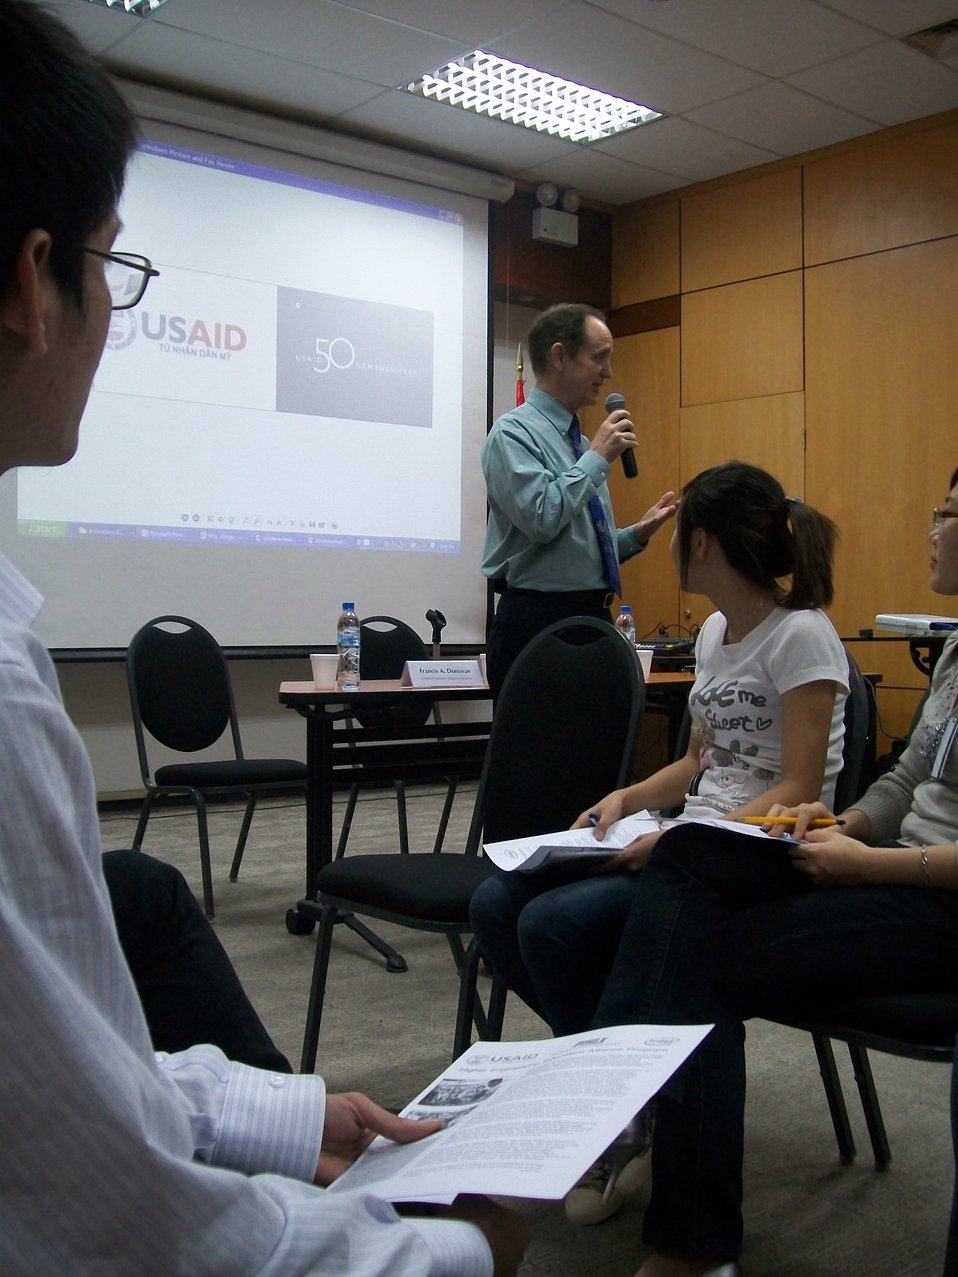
American Center and USAID host Debate Club on Higher Education

USAID/Vietnam Mission Director Francis Donovan address students and discusses the USAID-supported Higher Engineering Education Alliance Program with Arizona State University, Intel, and others.